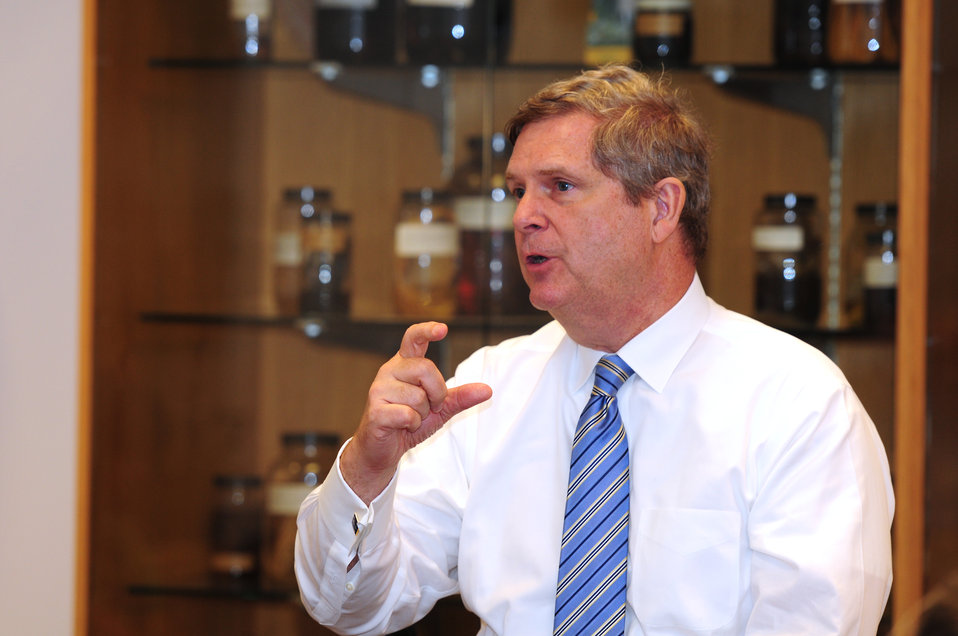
Agriculture Secretary Tom Vilsack speaks at a stakeholder meeting held at the State of Hawaii, Department of Agriculture Plant Quarantine Building in Honolulu, Hawaii, on Tuesday, January 10, 2012, to discuss USDA programs, agricultural challenges in Hawaii, and alternative energy.